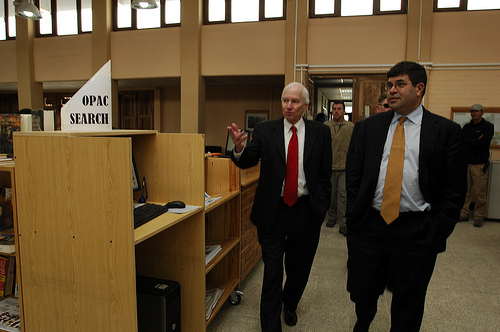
Tour of the American University of Afghanistan

Deputy Secretary Wolin touring the American University of Afghanistan in Kabul.